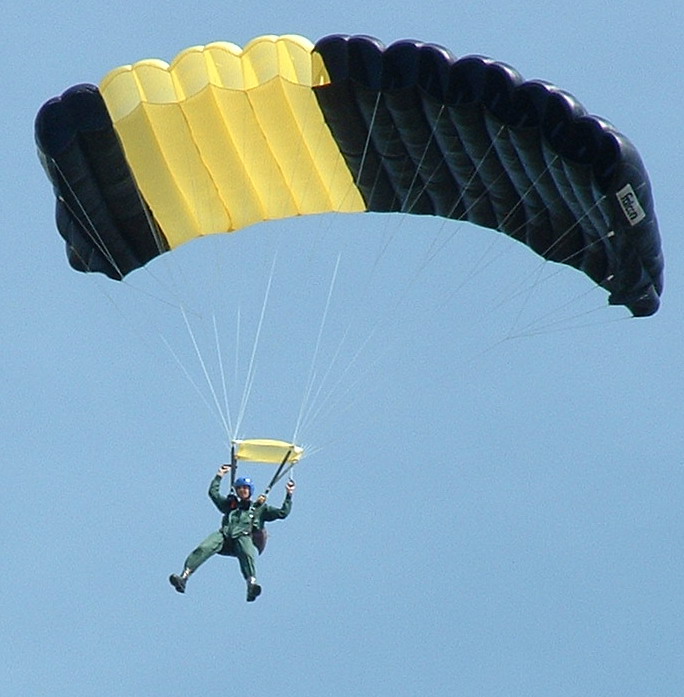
Čeština: Padák typu křídlo. Parachutes of typo Wing.